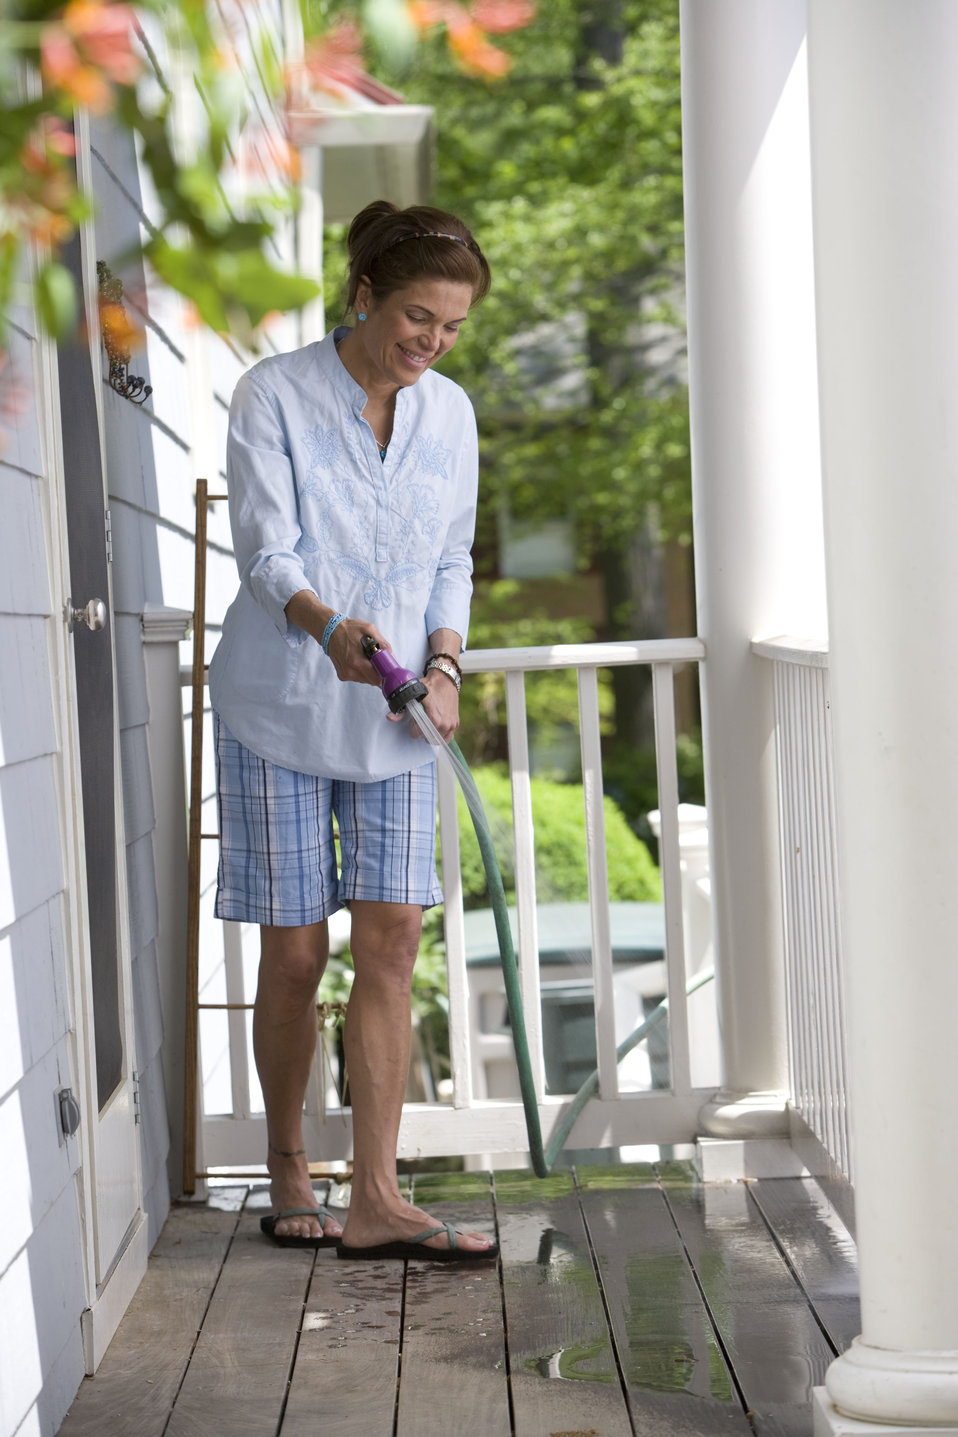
Home maintenance includes both the indoor, and as was the case here, outdoor environment, and is an ongoing process with which a homeowner need to keep up in order to provide for a healthy living space. Keeping your porch dust free reduces the amount of contaminants tracked into the house.